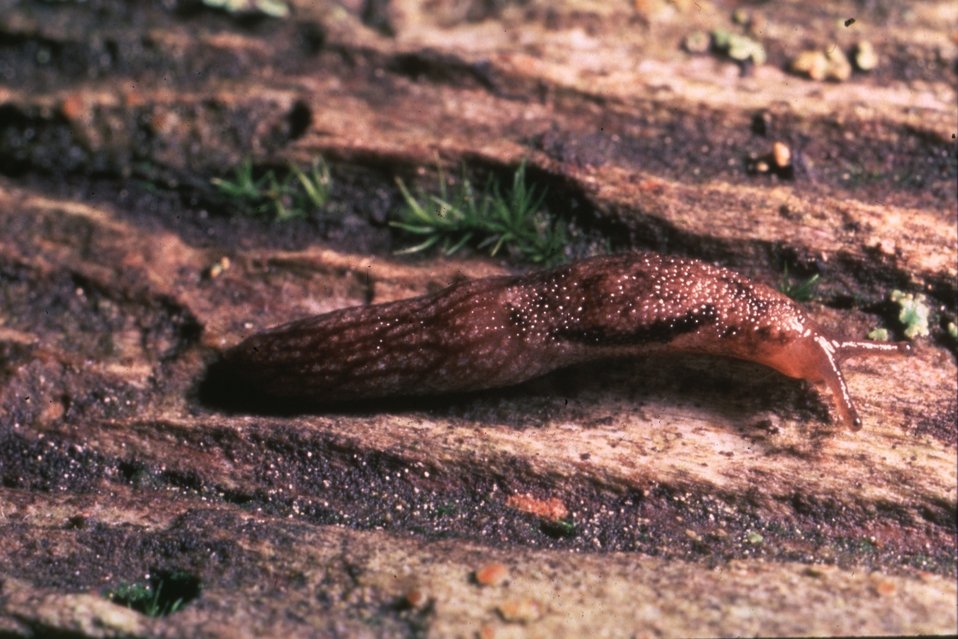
Papillose Tail-dropper (Prophysaon dubium)